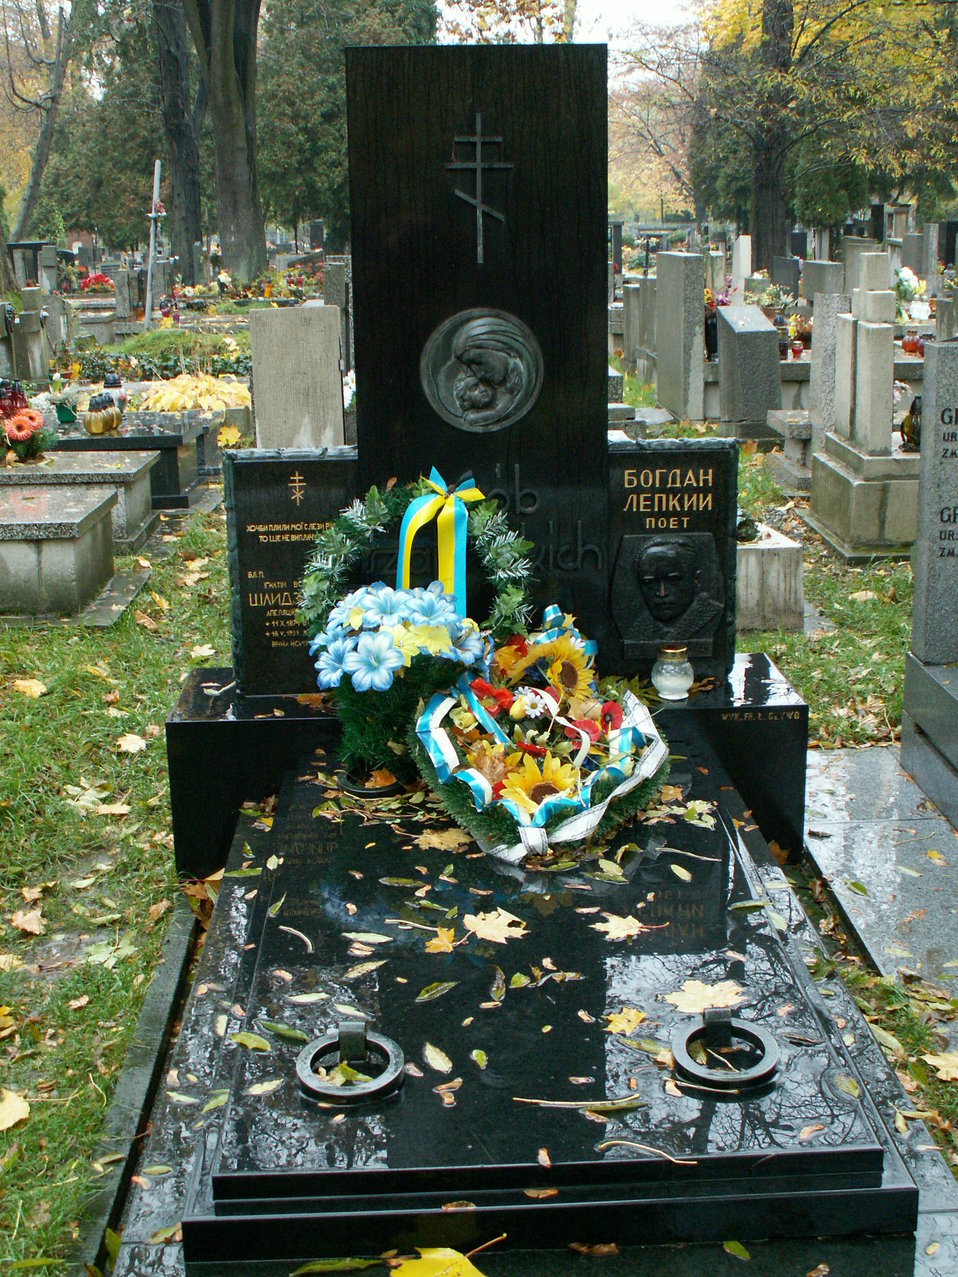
Bogdan Lepkii Grave in Krakiv Українська: Могила Богдана Лепкого на Раковецькому цвинтарі у Кракові